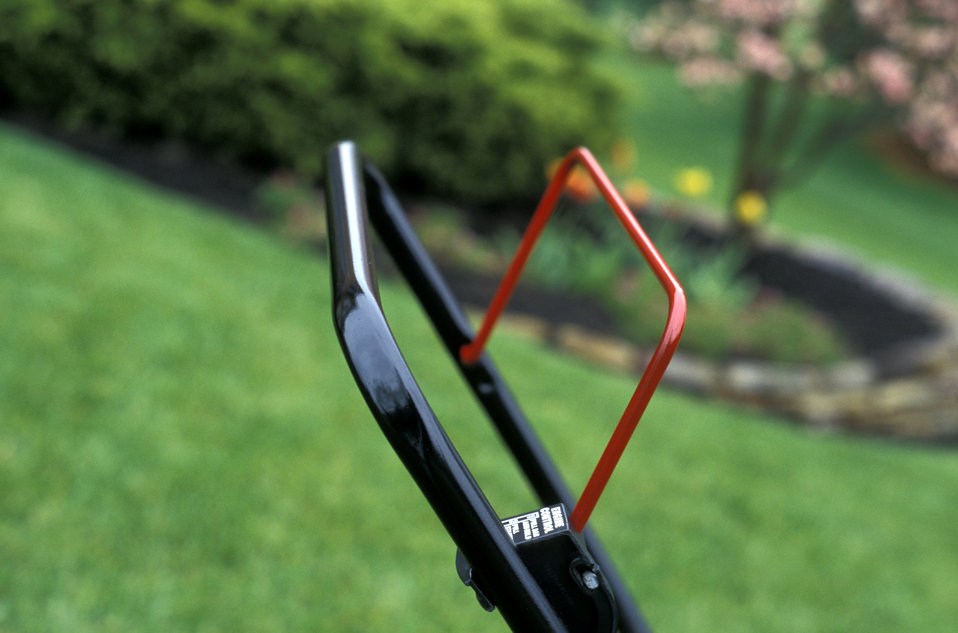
This 1997 photograph depicted a detail view of a push-rotary lawn mover handle, equipped with a safety bar, sometime referred to as a 'dead man's switch'. This switch must be pressed continuously in order to maintain the mower in its operating mode. When released for any reason, the motor stops immediately thereby, preventing an inadvertent injury. Such injuries can occur when users are working around the spinning blade during maintenance of the machinery, or if someone walks away from a mower, and it should roll away.